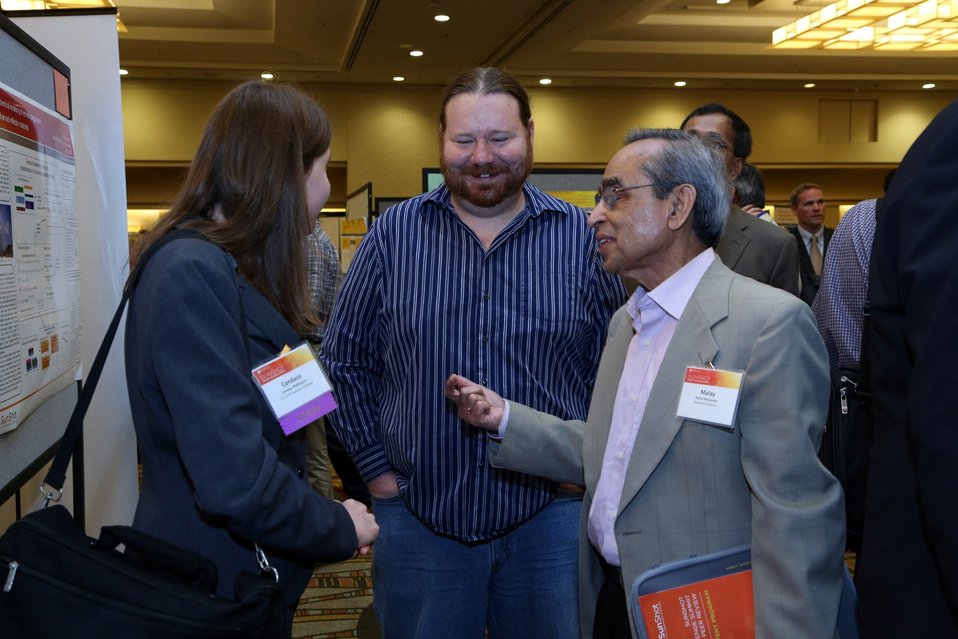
Tech Forum 18

Attendees and awardees connect at the Tech Forum.